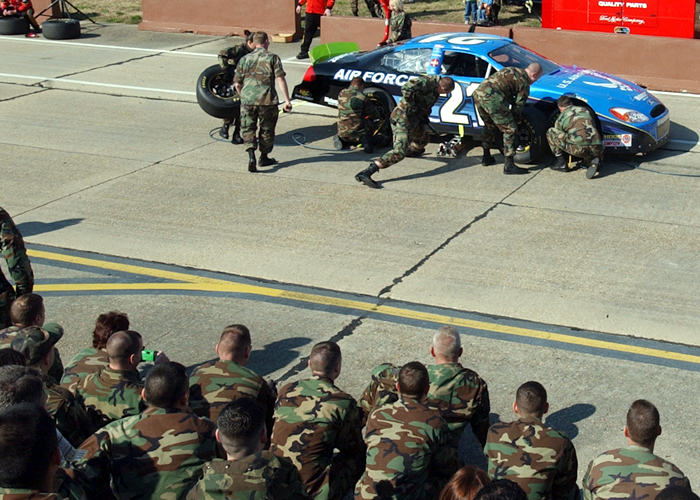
It's the pits!

TYNDALL AIR FORCE BASE, Fla. -- Nine teams here participated in the Air Force Pit Stop competition Jan. 12. Teams vied to see who could change two tires the fastest on the Air Force/Motorcraft Wood Brothers Racing Ford Taurus. A team representing Tyndall's 1st Aircraft Maintenance Unit won with a time of 19.7 seconds. They received the hood from the Motorcraft/Air Force race car that competed at Homestead International Speedway in Homestead, Fla.